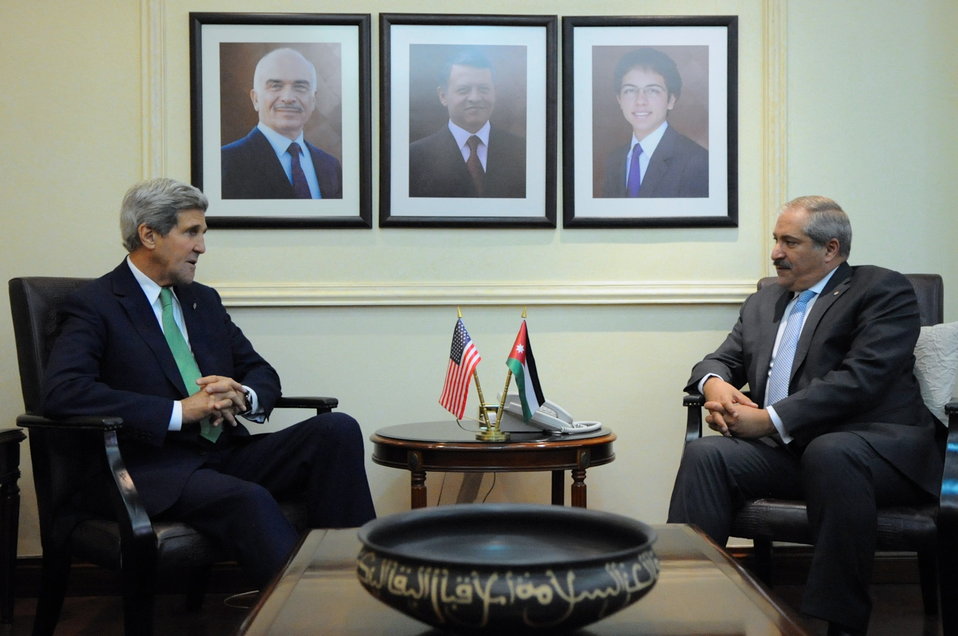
Secretary Kerry Meets With Jordanian Foreign Minister Judeh in Amman

U.S. Secretary of State John Kerry speaks with Jordanian Foreign Minister Nasser Judeh at his office in Amman, Jordan, on November 7, 2013, before a working lunch focused on Middle East issues.